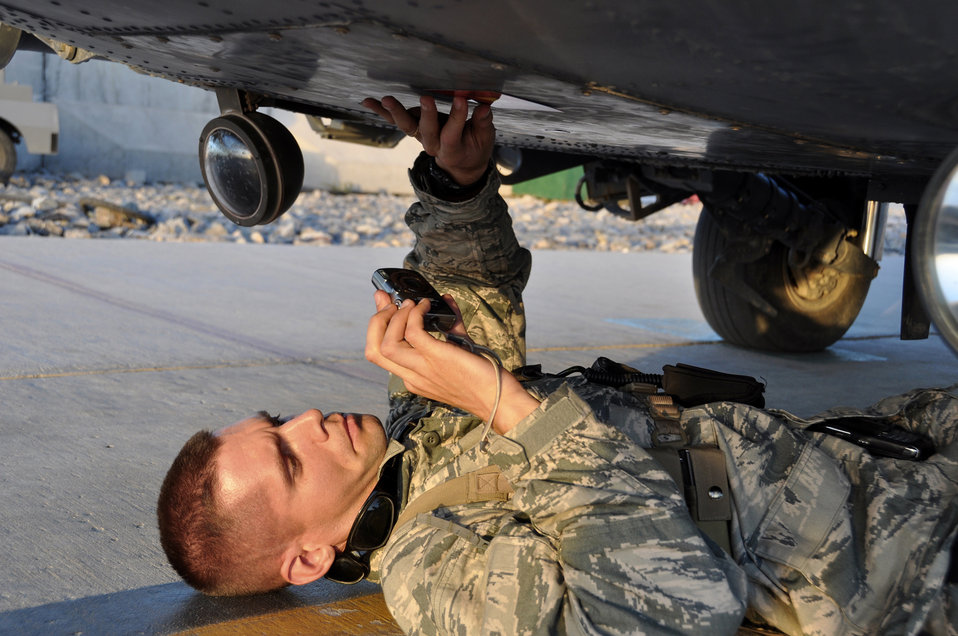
Here's proof

Capt. Mark Friesen, who is assigned to the Joint Combat Assessment Team at Kandahar Airfield, Afghanistan, takes a photo of a bullet entry point on an HH-60G Pave Hawk June 6, 2010. The helicopter received enemy small-arms fire during a recent rescue mission. Captain Friesen is deployed from Wright-Patterson Air Force Base, Ohio.